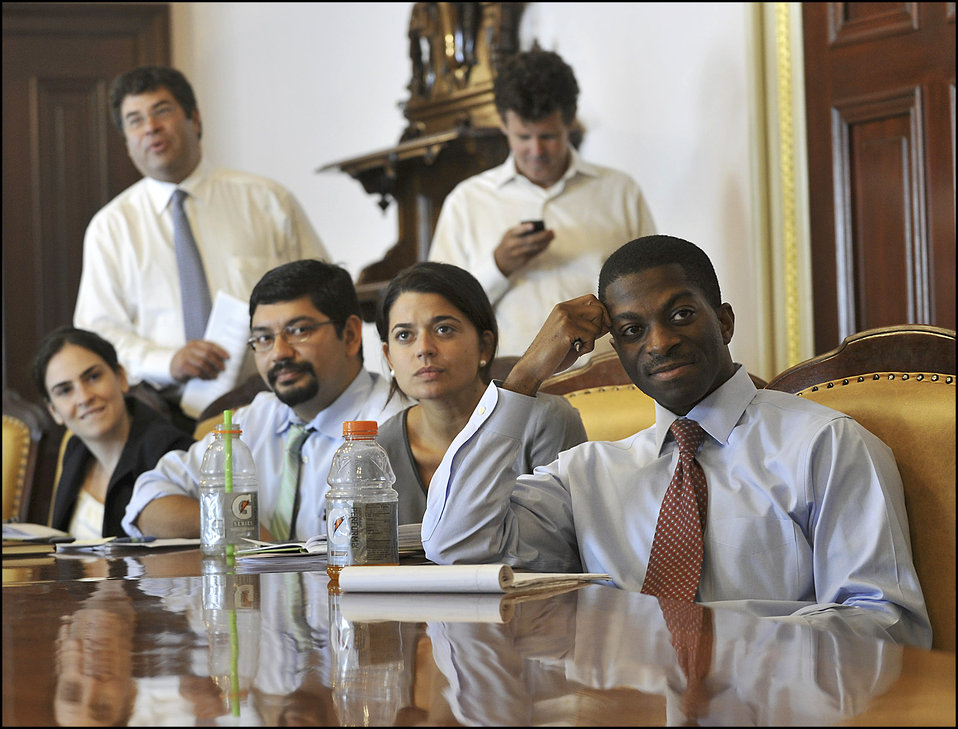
Behind the Scenes: Debt Limit

Staff gather at Treasury to watch the Senate vote on the debt limit on Tuesday, August 2, 2011.